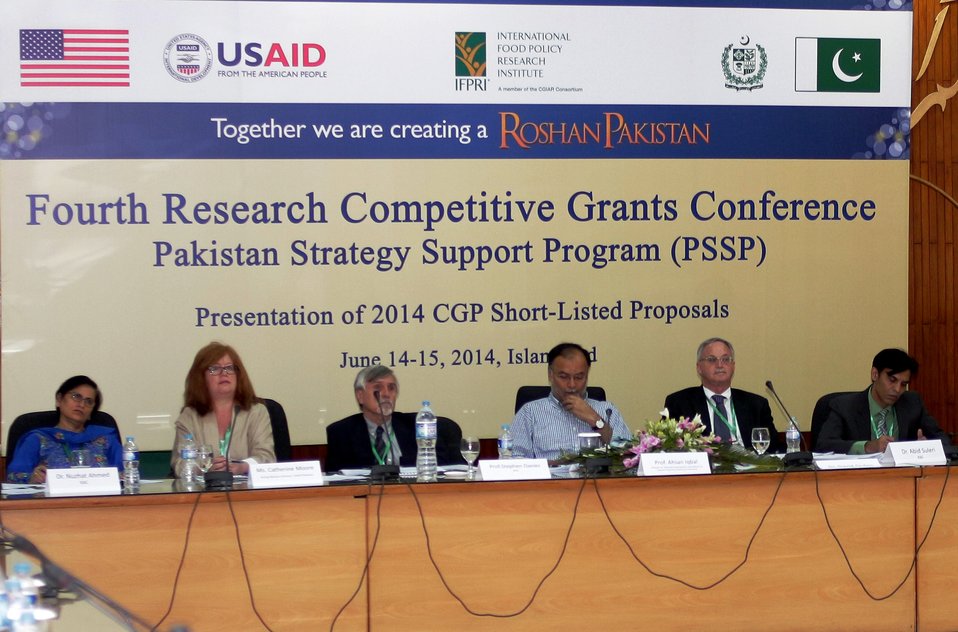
PSSP - CGP-IV research Conference, June 14, 2014

Dr. Nuzhat Ahmad, Senior Research Fellow IFPRI, Ms. Catherine Moore, Deputy Mission Director USAID-Pakistan, Prof. Stephen Davies, Chief of Party, Pakistan Strategy Support Program (PSSP), Prof. Ahsan Iqbal, Federal Minister for Planning, Development and Reforms, Dr. David Orden, Senior Research Fellow, IFPRI and Dr. Abid Sulehri, Director SDPI at the Inaugural Session of the Fourth Research Competitive Grants Conference organized by PSSP at the Planning Commission of Pakistan